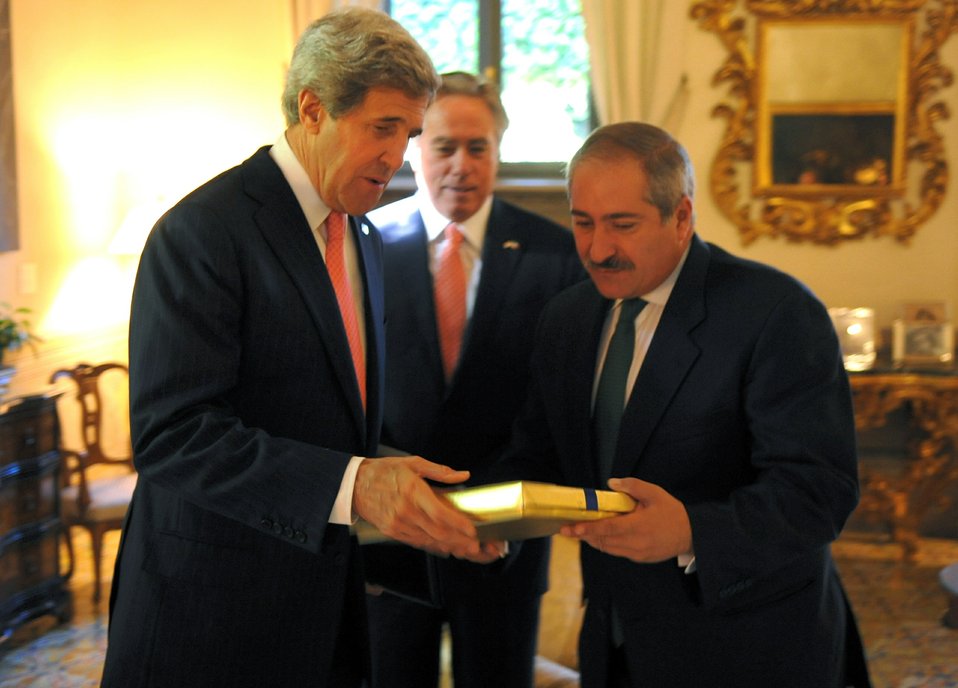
Secretary Kerry Presents a Gift to Jordanian Foreign Minister Judeh

With U.S. Ambassador to Italy David Thorne looking on, U.S. Secretary of State John Kerry presents a gift to Jordanian Foreign Minister Nasser Judeh before a meeting in Rome, Italy, on May 9, 2013.